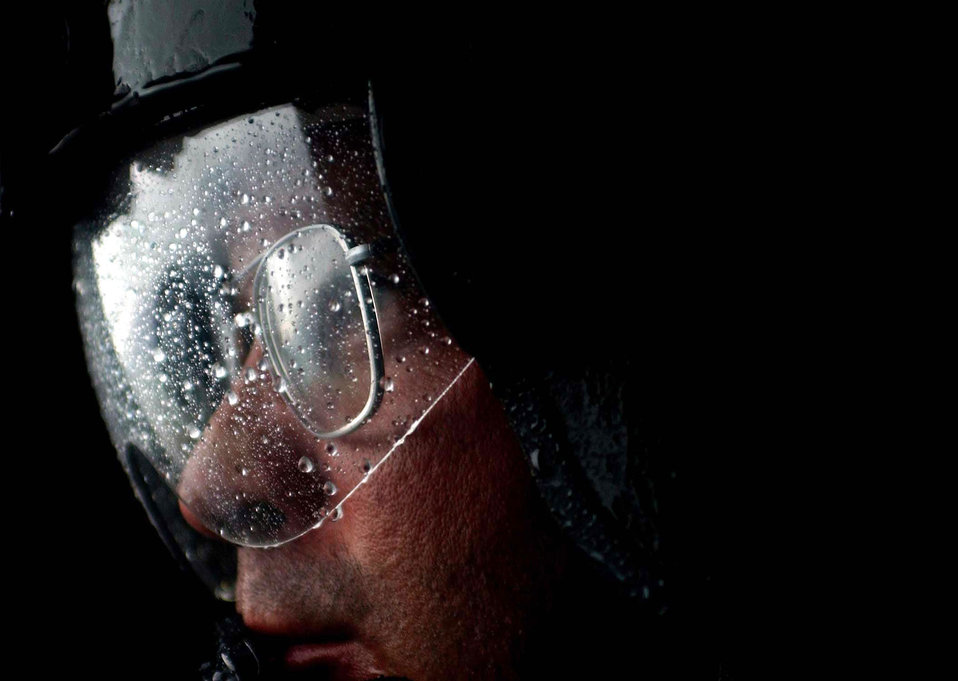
All-weather rescue

LUNGI, Sierra Leone -- Staff Sgt. Joey Bishop watches intently out an open window as his helicopter refuels after an evacuation mission into the U.S. Embassy in Liberia, July 28, 2003. Bishop is a flight engineer with the 56th Rescue Squadron, Naval Air Station Keflavik, Iceland. The squadron is currently in Sierra Leone to provide personnel recovery and emergency evacuation capability for the Humanitarian Assistance Survey Team and the Fleet Anti-terrorism Security Team in Liberia.